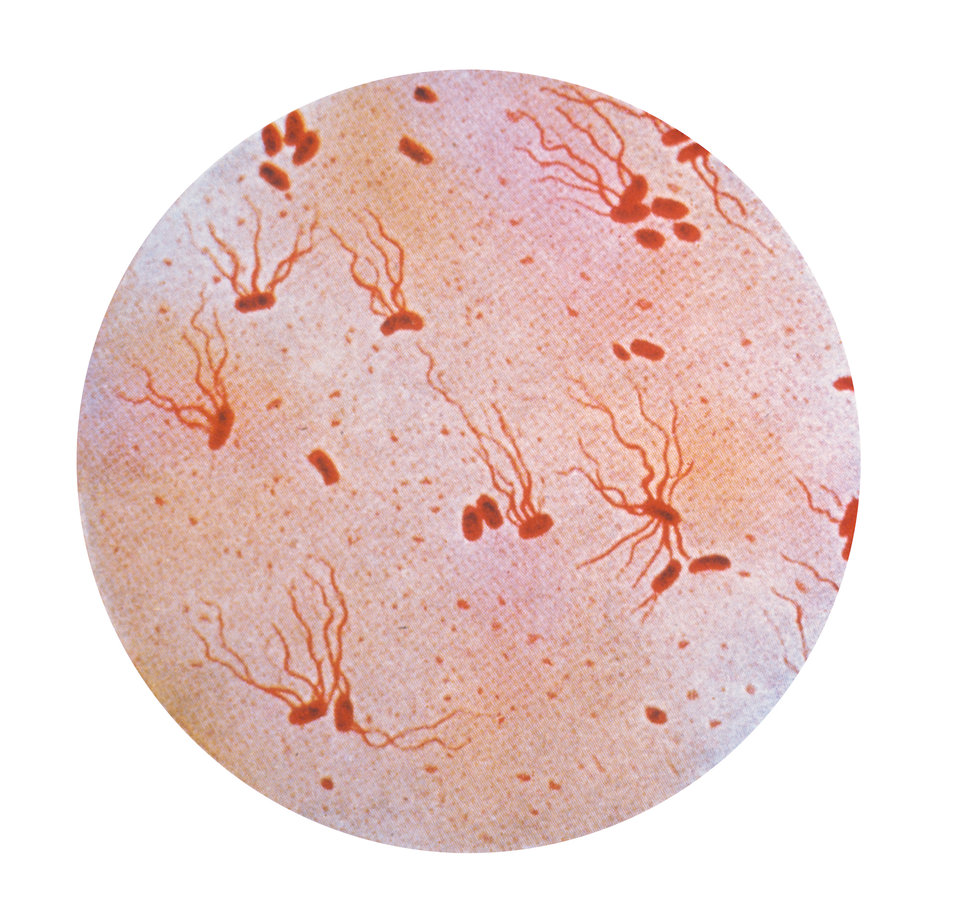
A photomicrograph of Salmonella typhosus bacteria using a Flagellar stain technique.